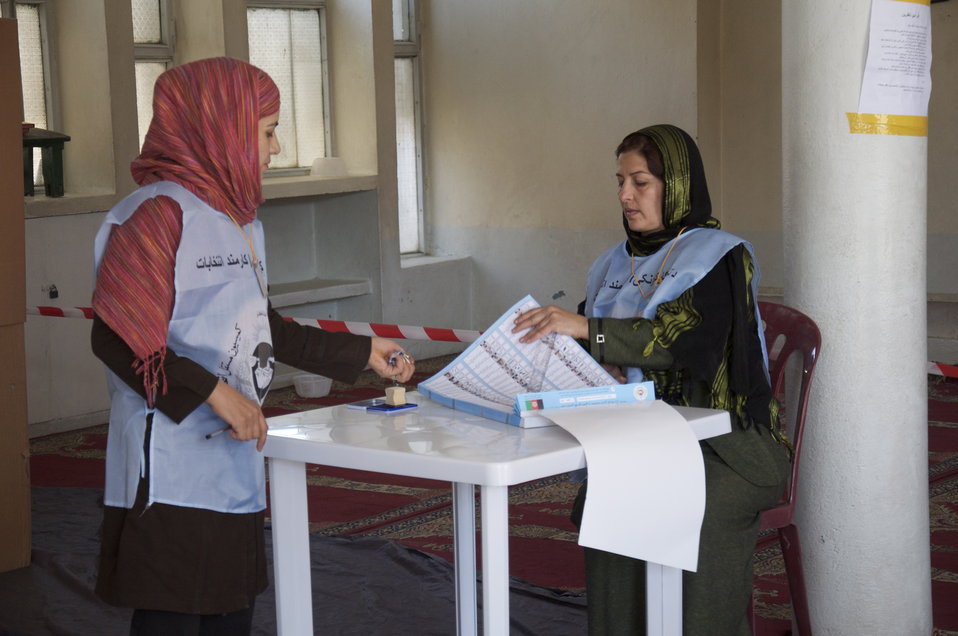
Polling Place Workers